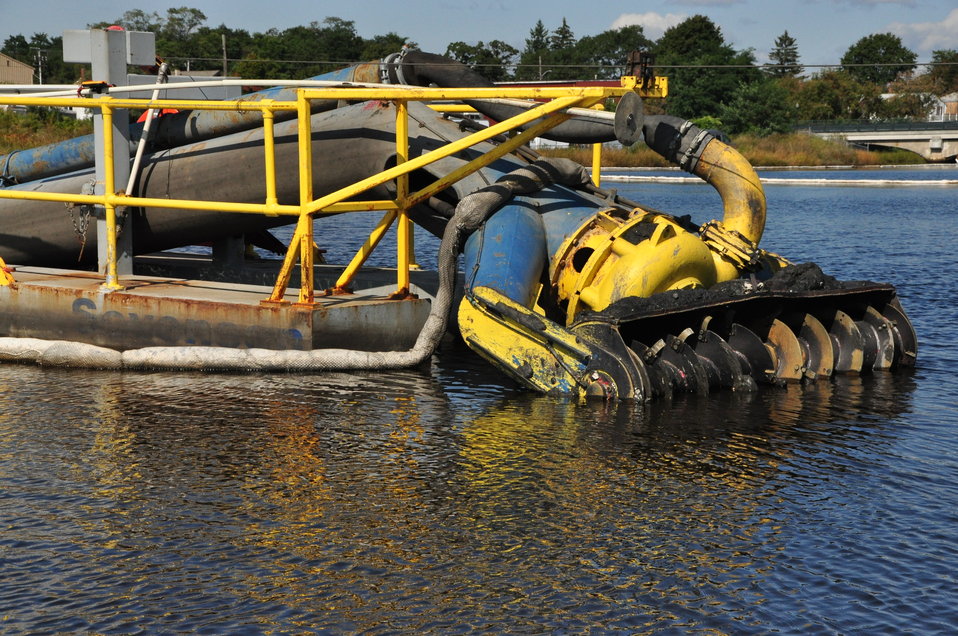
October 2009, Close-up of the dredge

The dredge works its way along the bottom of the harbor, spinning and pumping up the sediment - somewhat similar to the carpet attachment on a household vacuum, but on a much larger scale.